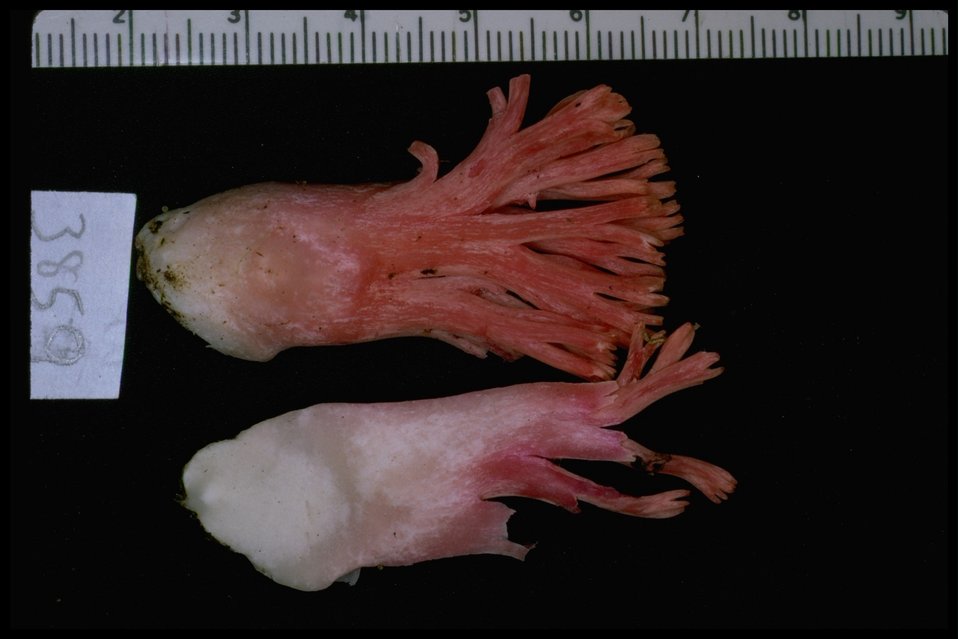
Medium shot of coral mushroom (Ramaria stuntzii).